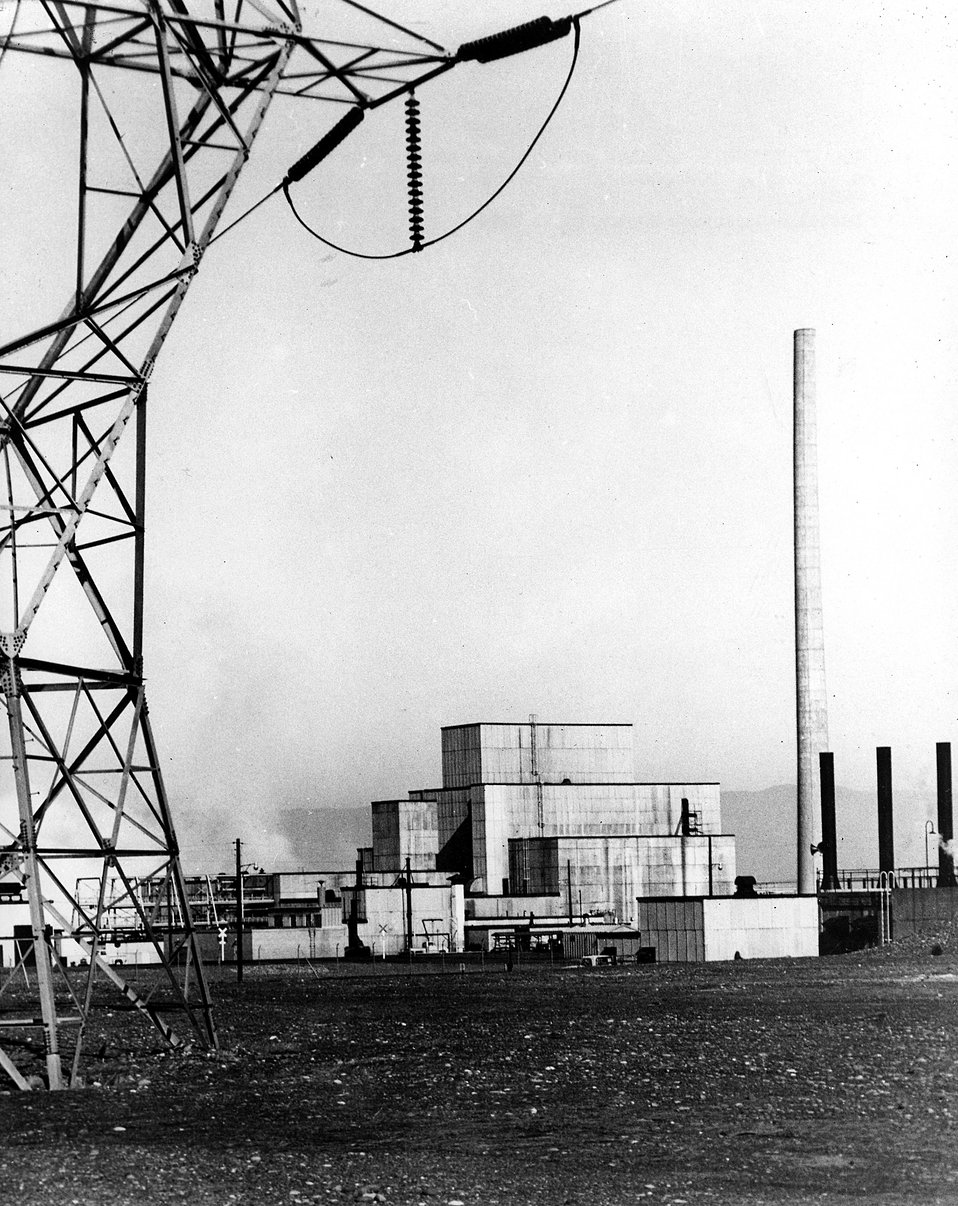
Reactor area, at Richland, Washington. c. 1965